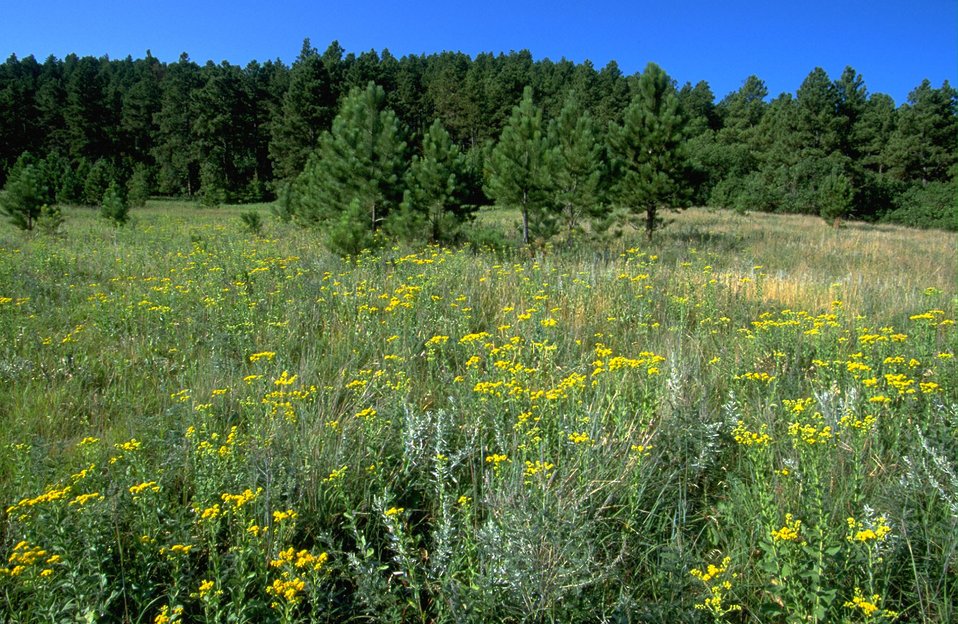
Grassland with Ponderosa Pine in the background